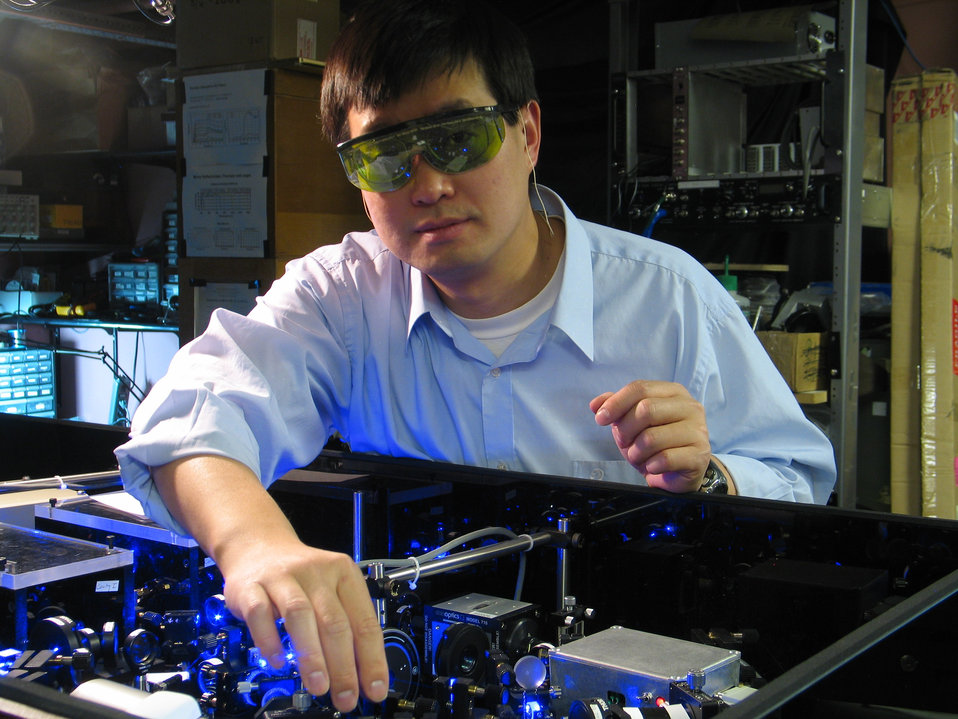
Colliding Fermions; Atomic Clock Accuracy

NIST physicist Jun Ye adjusts the laser setup for a strontium atomic clock in his laboratory at JILA, a joint institute of NIST and the University of Colorado at Boulder.